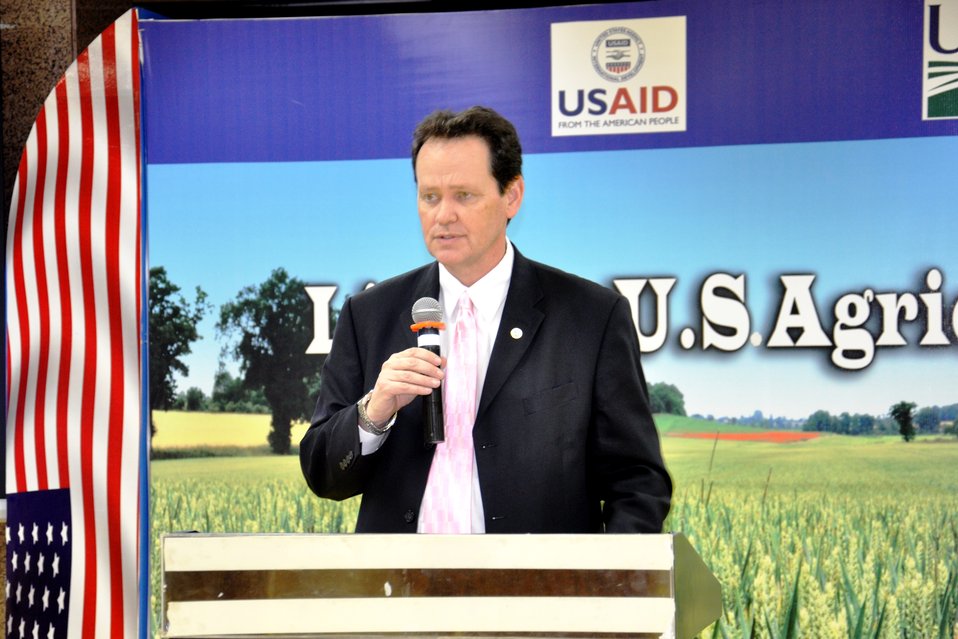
Richard T. Drennan, Agricultural Counselor addressing the participants at the Expo